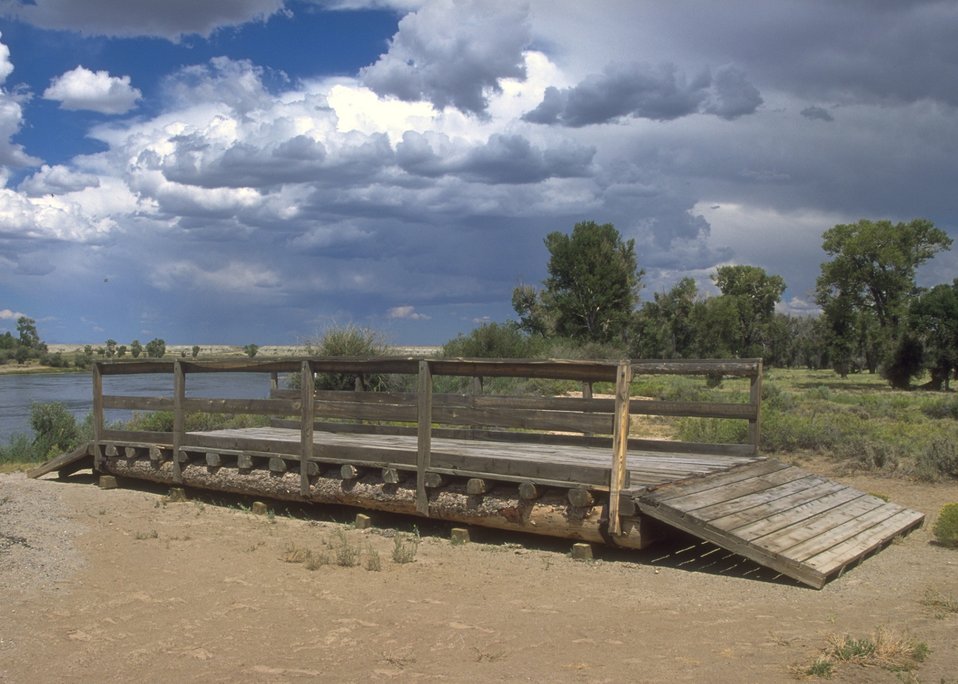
Replica of original ferry that was used for the 1997 Mormon Trail re-enactment crossing the Green River, Rock Springs Field Office.